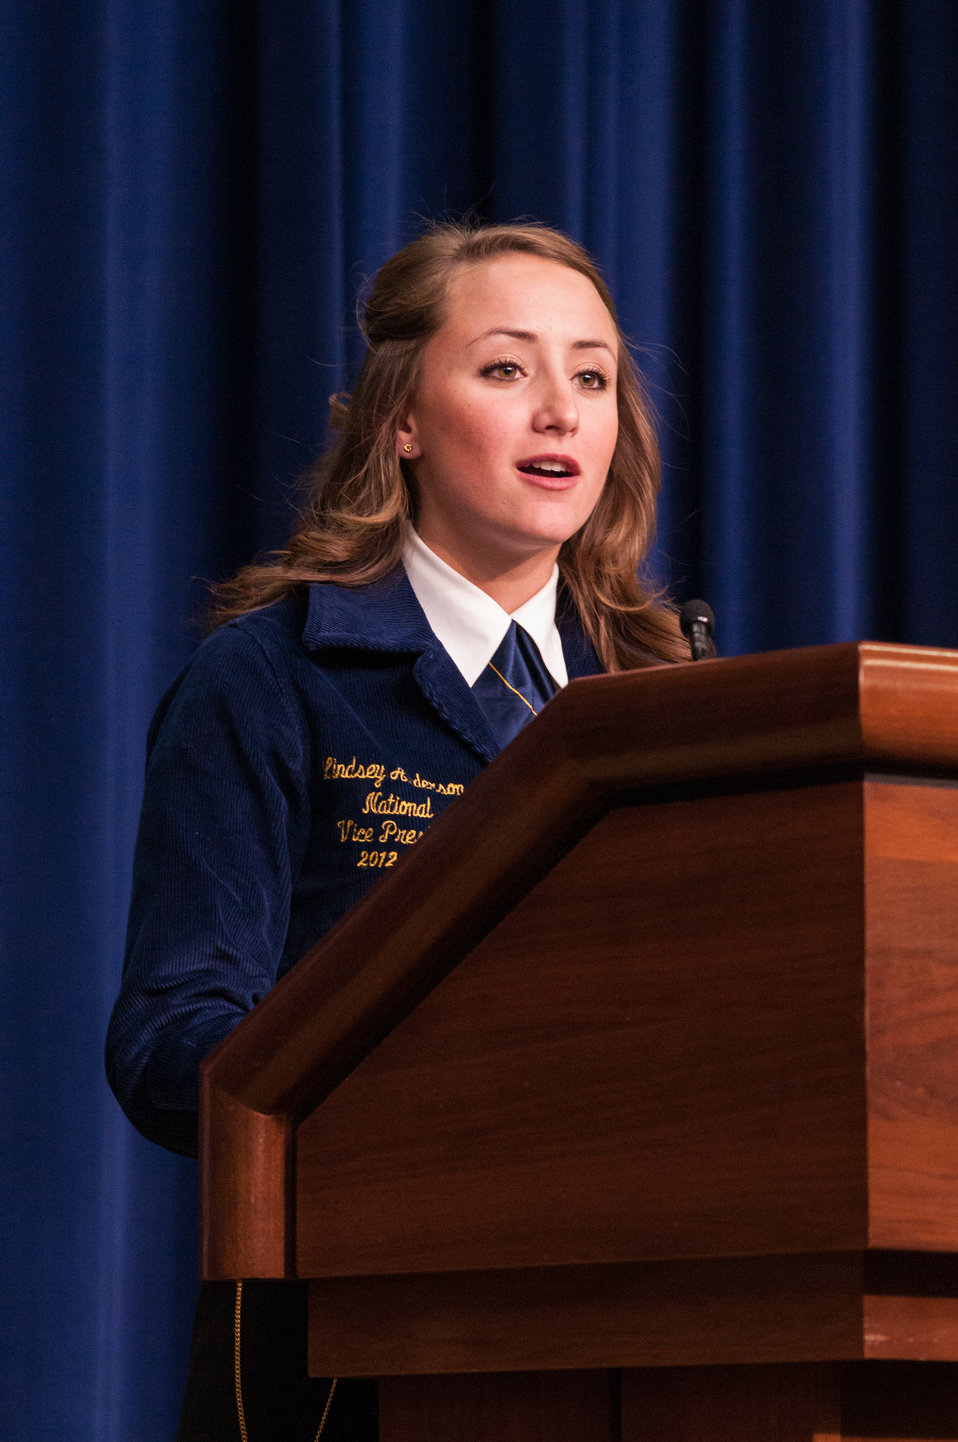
FFA National Secretary Kalie Hall (GA) introduces Education Secretary Arne Duncan, White House Chef Sam Kass and White House Domestic Policy Council Senior Policy Advisor for Rural Affairs Doug McKalip at a meeting of the White House Rural Council to an audience of the National FFA State President’s Conference on Wednesday, Jul. 24, 2013 in Washington, D.C.